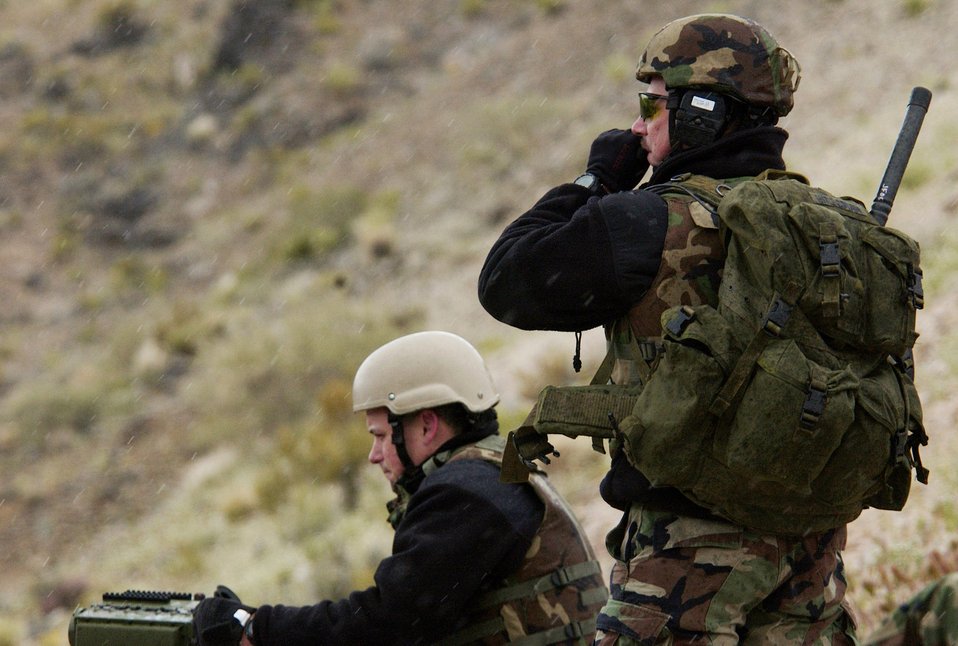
JTACs sharpen war skills in Nevada

Master Sgt. Craig Hillsman provides target information to A-10 Thunderbolt IIs during a training exercise at the Nevada Test and Training Range while Tech. Sgt. Robert Mathis operates a ground laser target designator to mark targets for the A-10s to attack. The sergeants are joint terminal attack controller instructors with the 6th Combat Training Squadron at Nellis Air Force Base, Nev. A JTAC acts as a liaison between forces on the ground and aircraft working in support of those forces and will provide target information prior to providing weapons release authority to the aircraft.